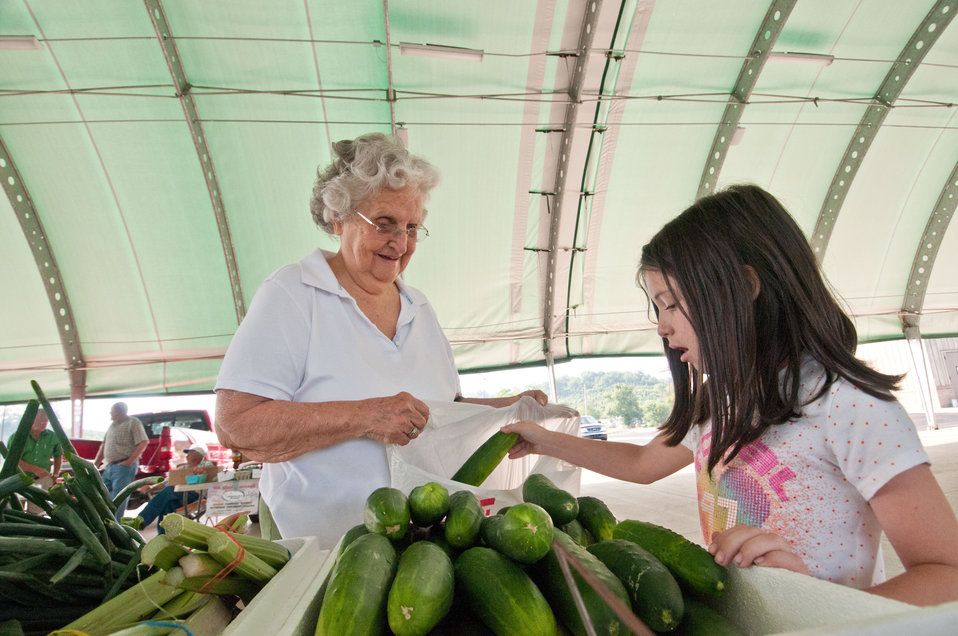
Kaylee Black (7, right) helps Bath County resident Virginia Lollis pick her cucumbers at the Bath County Agricultural Education and Marketing Center, Owingsville, KY, on Friday, July 15, 2011. The Center was the recipient of a $400,000 Rural Business Enterprise Grant. It has given farmers and producers from Bath and surrounding counties the opportunity to manufacture and market their locally grown and locally produced value-added and “Kentucky Proud” branded products, including but not limited to, fresh produce, artisan crafts and specialty food products. The Center is open year-round and allow residents to sell products in four different retail categories, including Kentucky products, regional crafts, “green” groceries and bakery/deli. Several producers expressed their gratitude for Rural Development’s assistance in making the center a reality. The project was made possible through funding the American Recovery and Reinvestment Act of 2009 enacted by the 111th United States Congress in February 2009 and signed into law on February 17, 2009, by President Barack Obama.